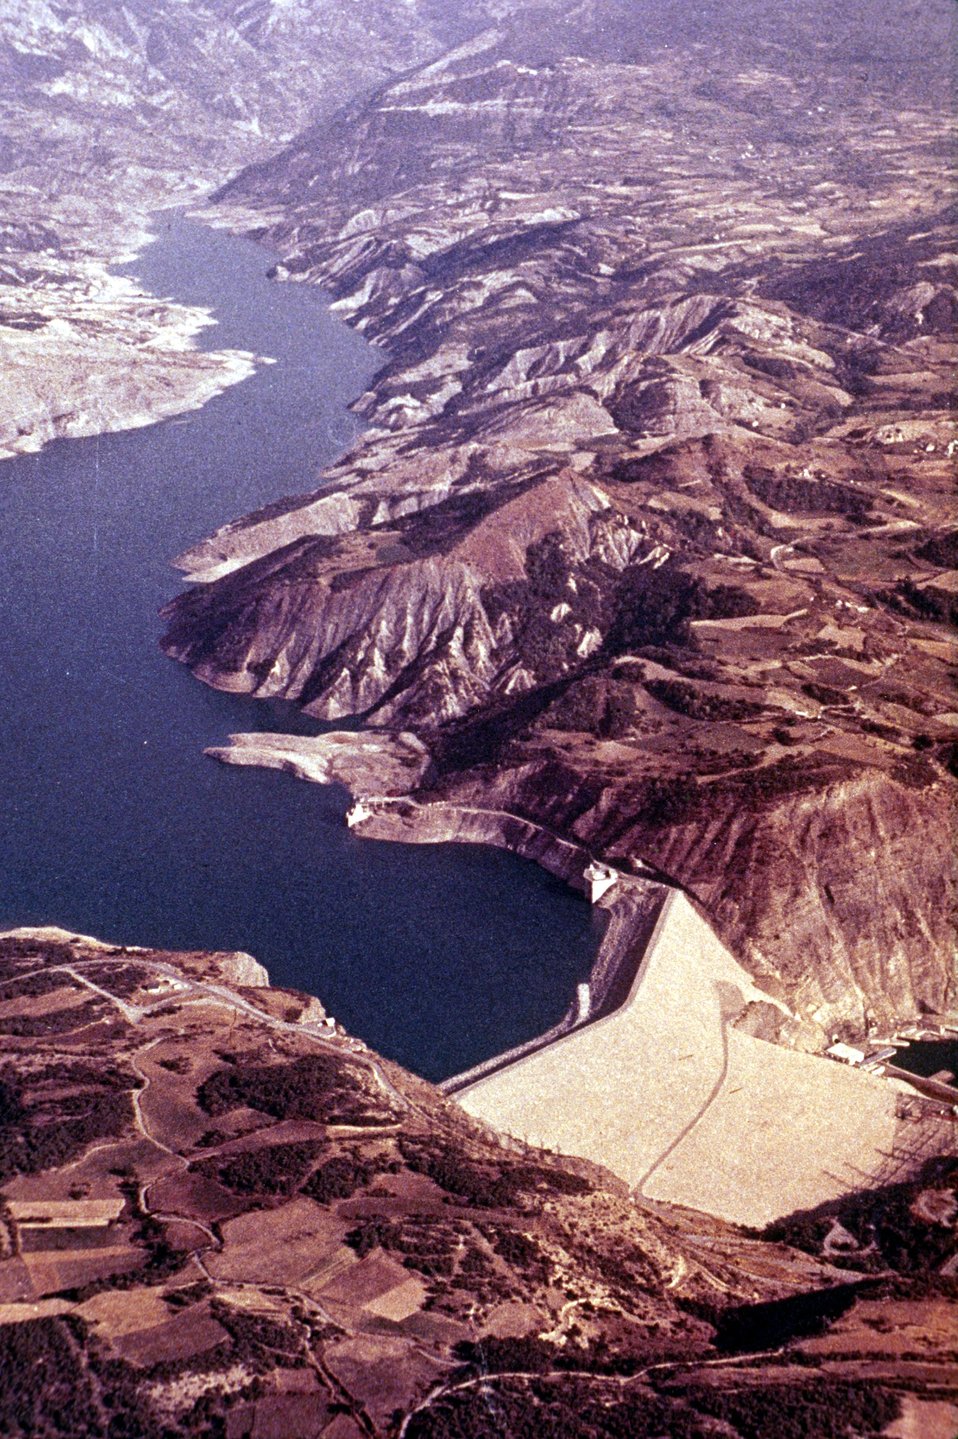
Pourquoi construire des barrages?